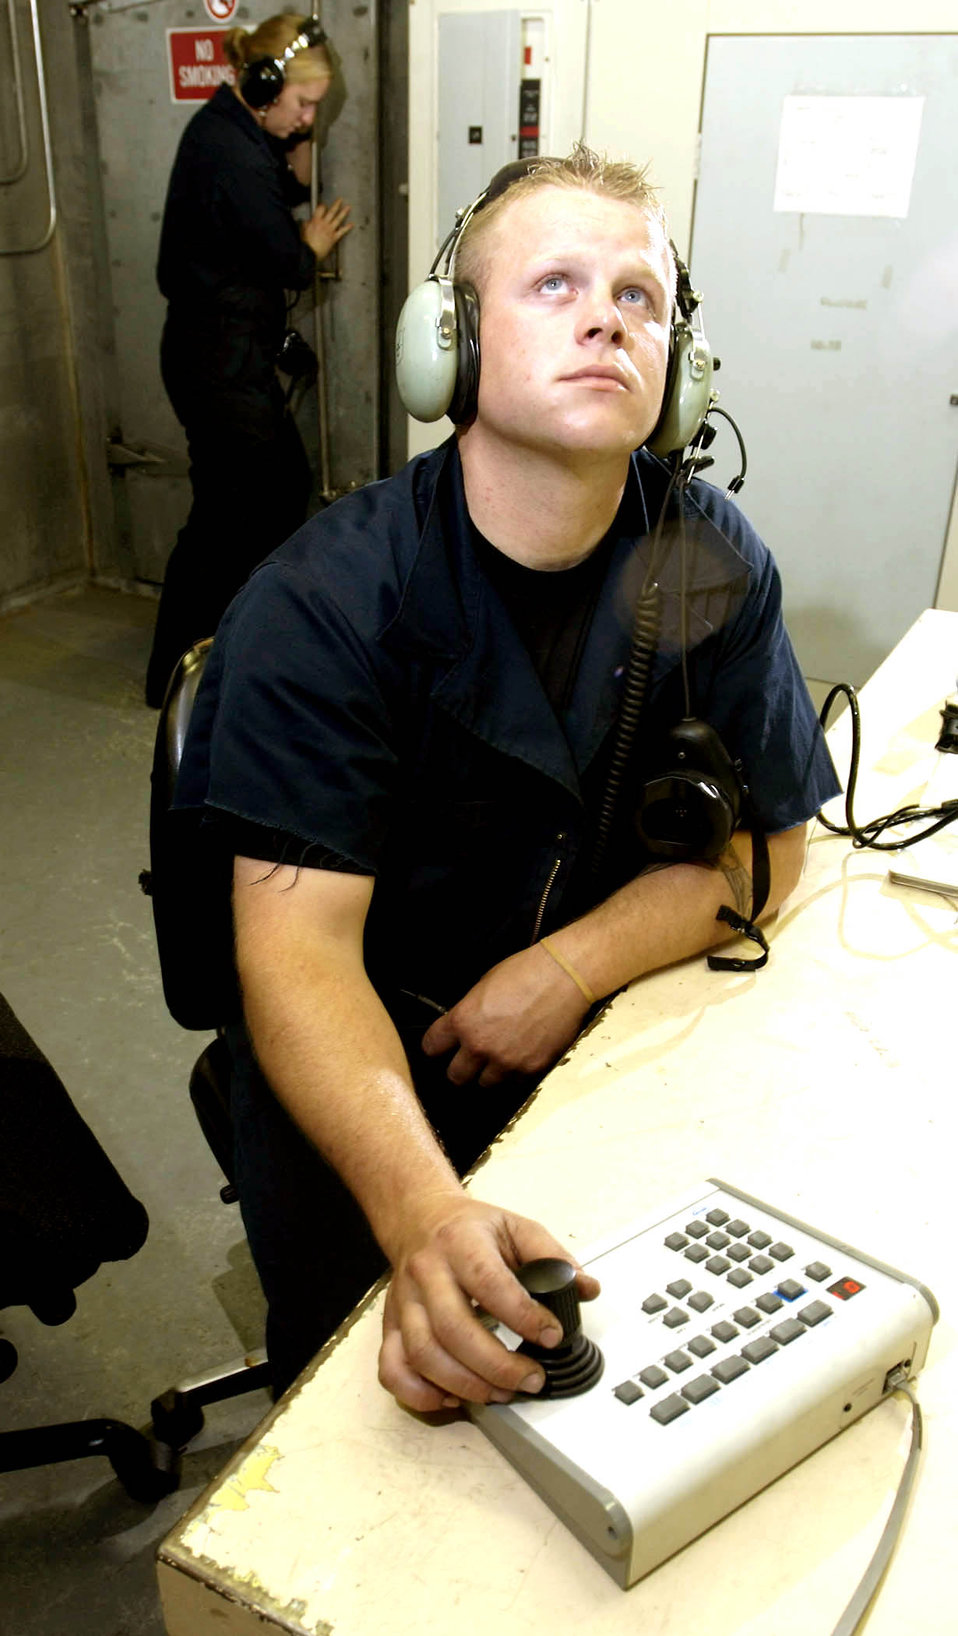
Hush, hush

RAMSTEIN AIR BASE, Germany -- Staff Sgt. David Stabbins watches a C-130 Hercules engine during an engine test in the hush house here. The hush house was originally made for conducting engine tests for the F-16 Fighting Falcon. The 86th Maintenance Squadron's propulsion flight is a centralized intermediate repair facility making it the focal point for any C-130 engines needing repairs in Europe or for operations Iraqi Freedom and Enduring Freedom.